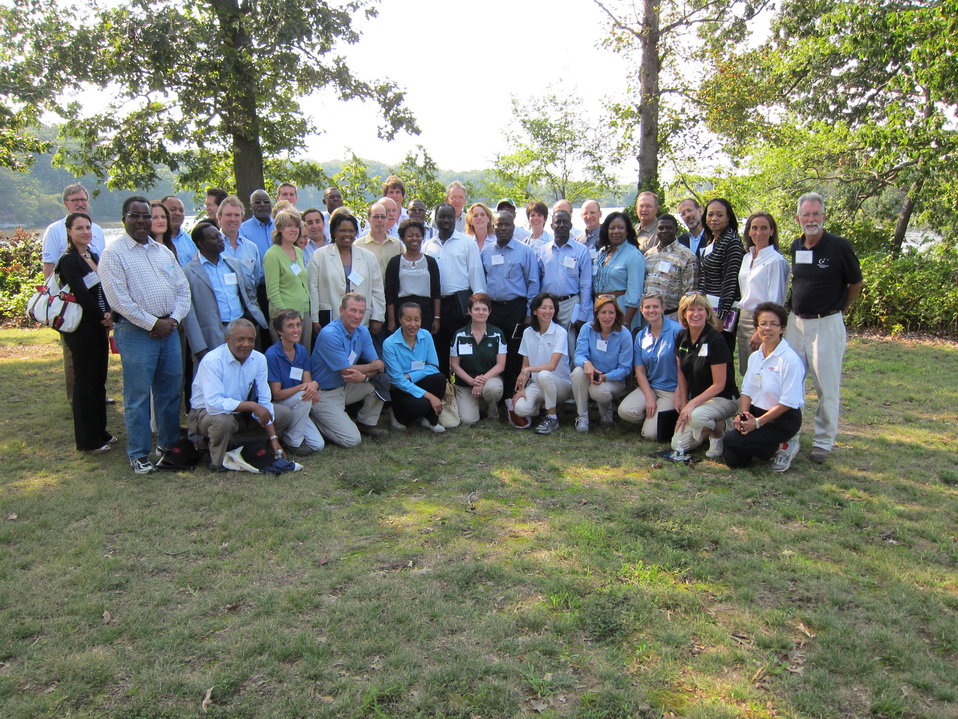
Conference Participants Pose for a Photo

Participants in the conference, “The Role of Biotechnology in Advancing African Agriculture,” pose for a photo at Chesapeake Farms in Maryland on September 14, 2011.